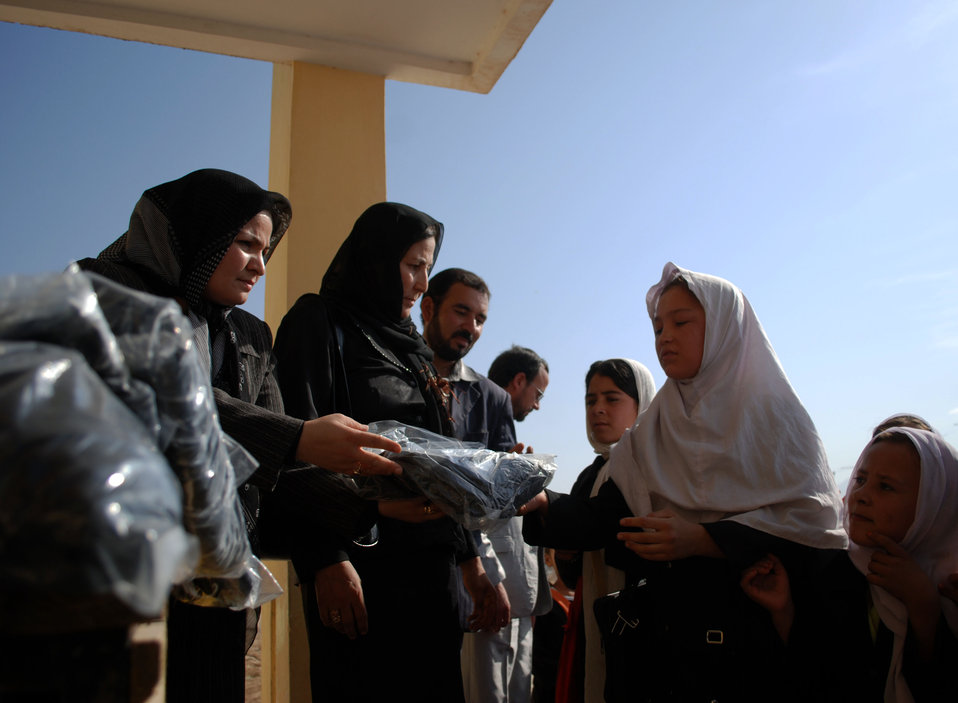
'On the Road' in Balkh Province